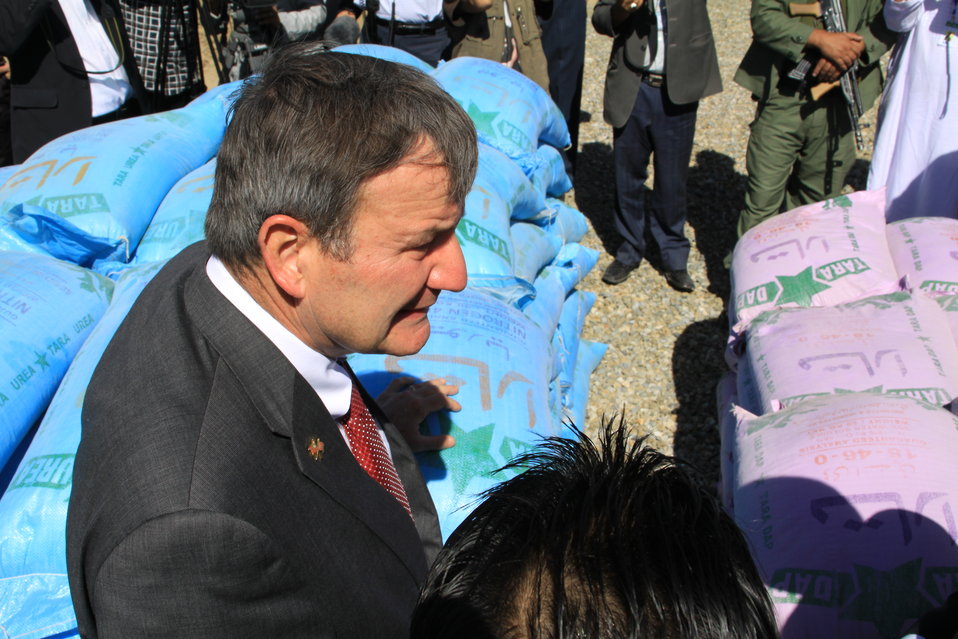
AVIPA Plus Wheat Seed Distribution 101005

US Ambassador Karl Eikenberry and USAID Acting Mission Director Kevin Brownawell joined the Minister of Agriculture, Irrigation and Livestock, H.E. Minister Mohammed Rahimi in signing a Memorandum of Understanding and distributing vouchers to area farmers for wheat and fertilizer.

US Ambassador Karl Eikenberry and USAID Acting Mission Director Kevin Brownawell joined the Minister of Agriculture, Irrigation and Livestock, H.E. Minister Mohammed Rahimi in signing a Memorandum of Understanding and distributing vouchers to area farmers for wheat and fertilizer.